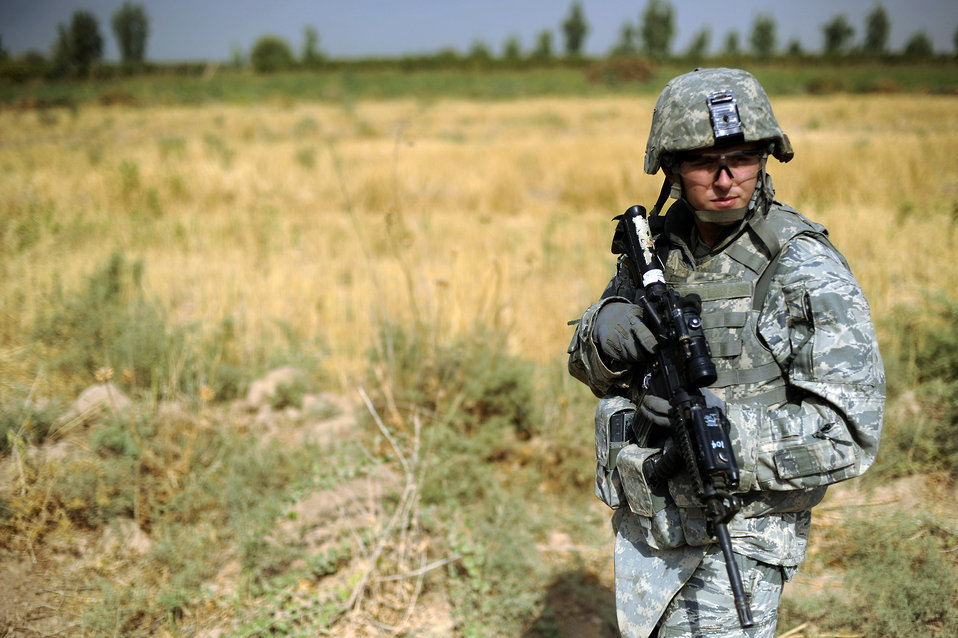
Airmen patrol outside to protect inside

Senior Airman Michael Emerson scans a field during a force protection patrol Oct. 17, 2009, outside Joint Base Balad, Iraq. Members of the 532nd Expeditionary Security Forces Squadron patrol to provide a security presence intended to deter anyone who would do harm to the people who live and work at the base. Airman Emerson is assigned to the 532nd ESFS.